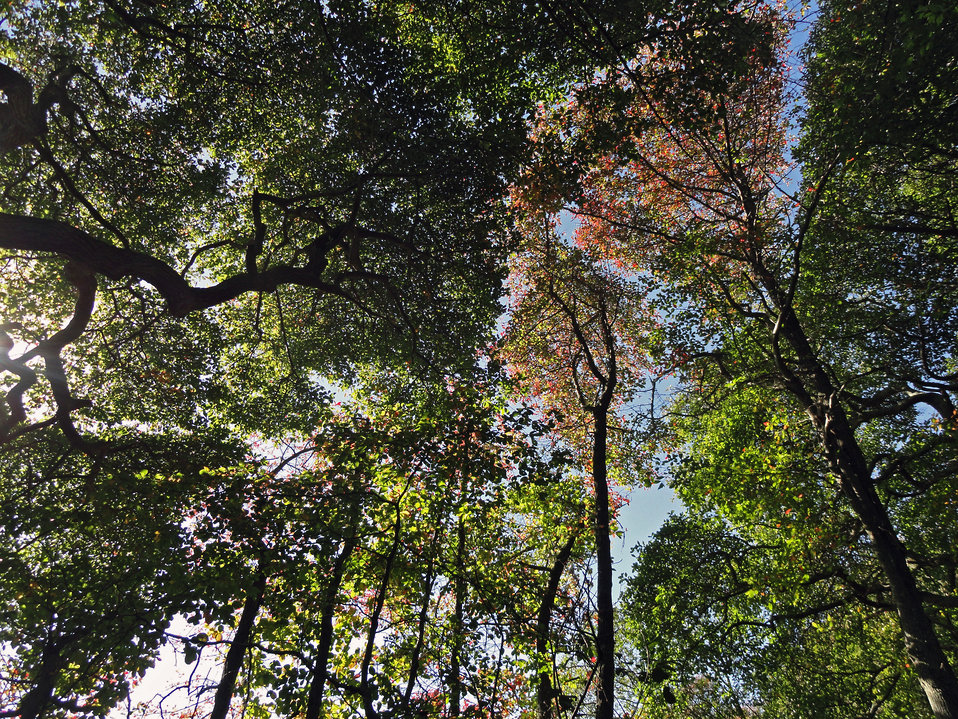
Trees

Photographed on Cape Cod, MA